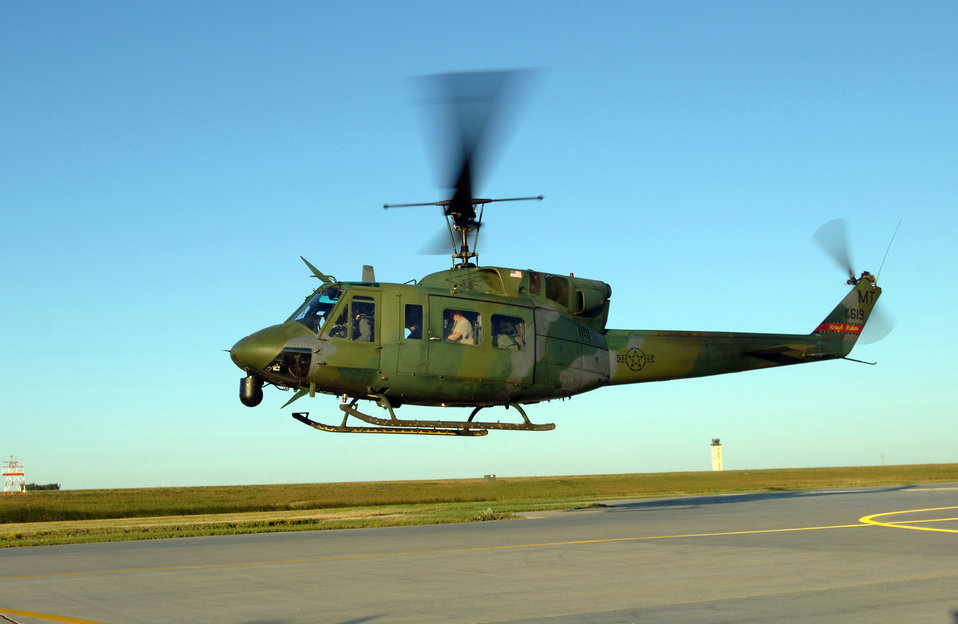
Minot helicopter flight supports hurricane relief efforts

MINOT AIR FORCE BASE, N.D. -- A UH-1N Huey helicopter takes off here Sept. 2 for Columbus Air Force Base, Miss., to assist in the Hurricane Katrina disaster relief efforts. Thirteen people and a helicopter from the 54th Helicopter Flight here are deploying to aid the recovery.